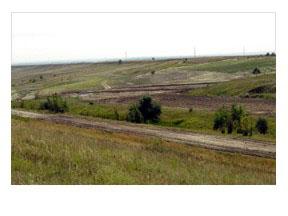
Rocky Flats post-cleanup

The former locations of Building 771 (foreground) and Buildings 776 and 777 (background) at the Rocky Flats Environmental Technology Site near Golden, CO.